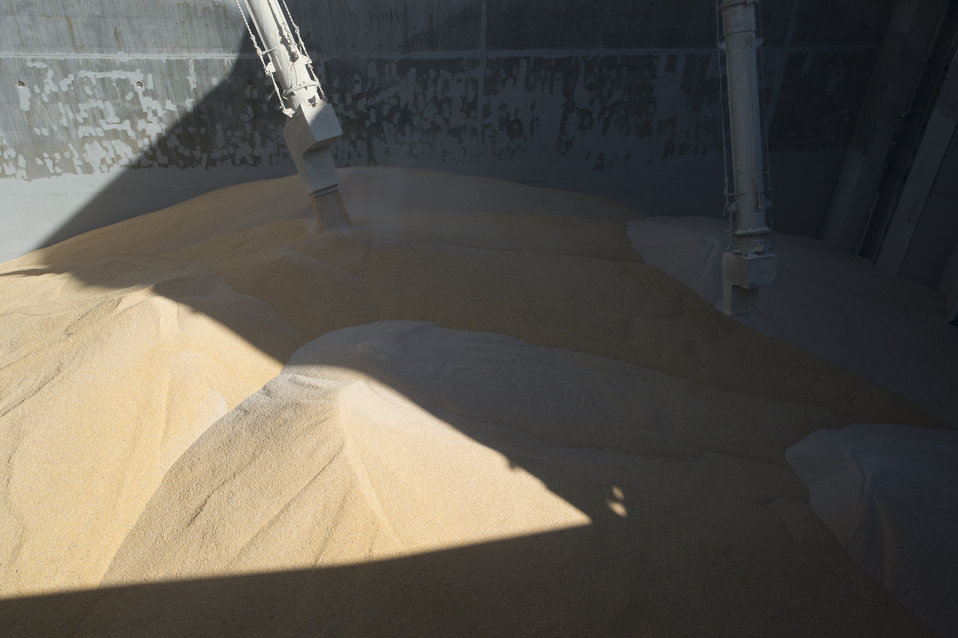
Grain is transferred from barges to to storage facilities near the Port of New Orleans in New Orleans, LA on Tuesday, Nov. 19, 2013.